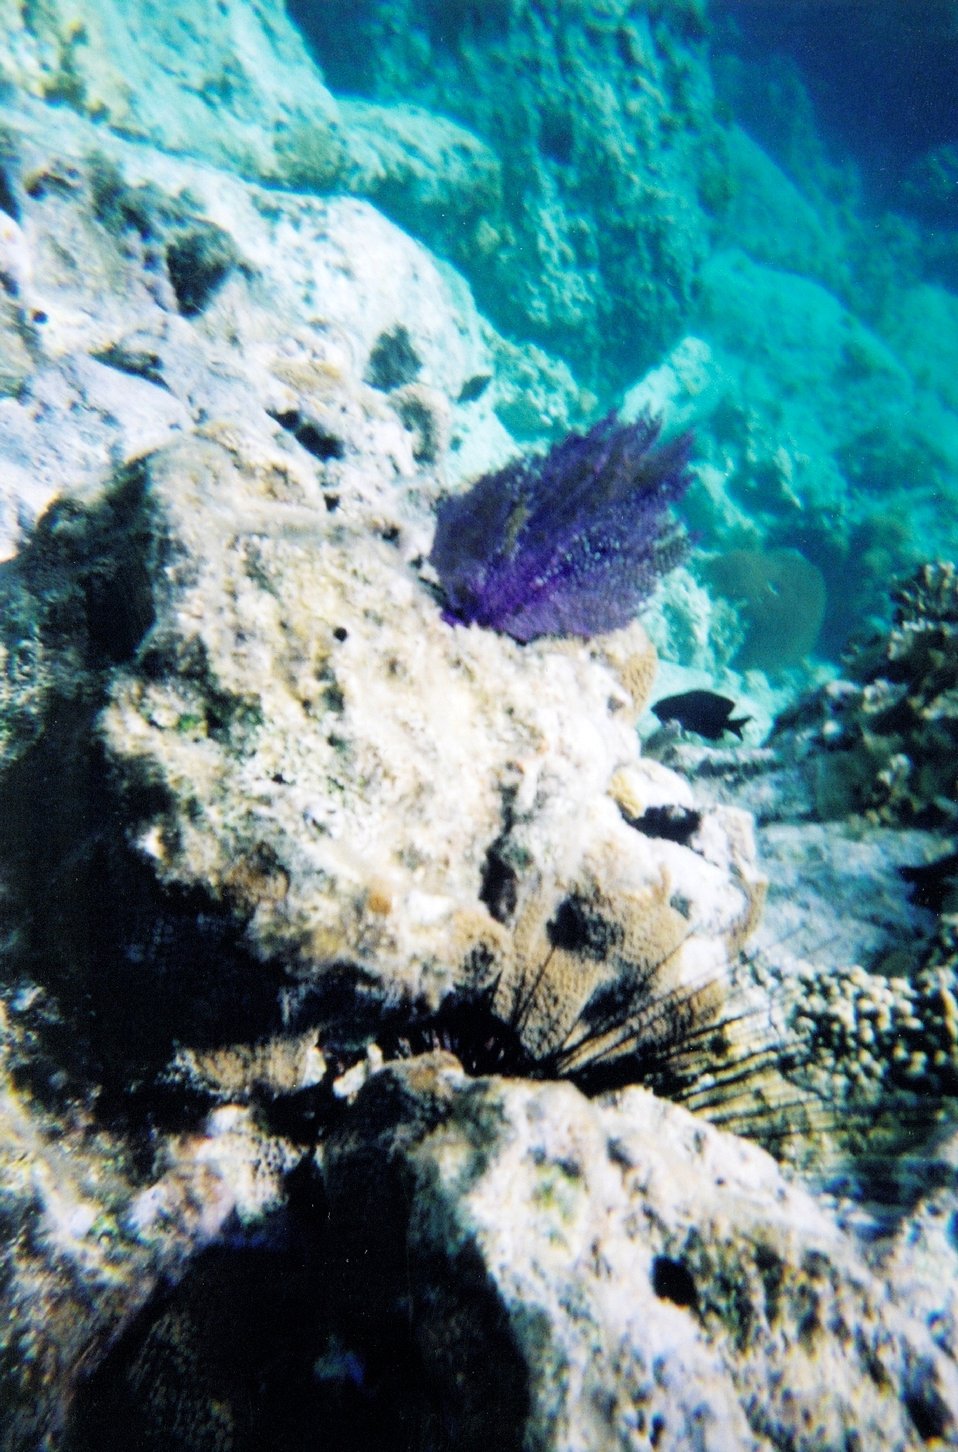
Snorkeling views.